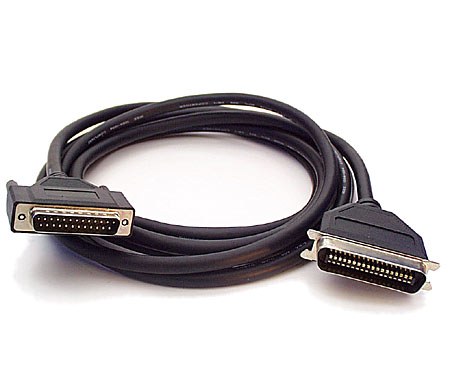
IEEE1284 Printer Cable Type AB